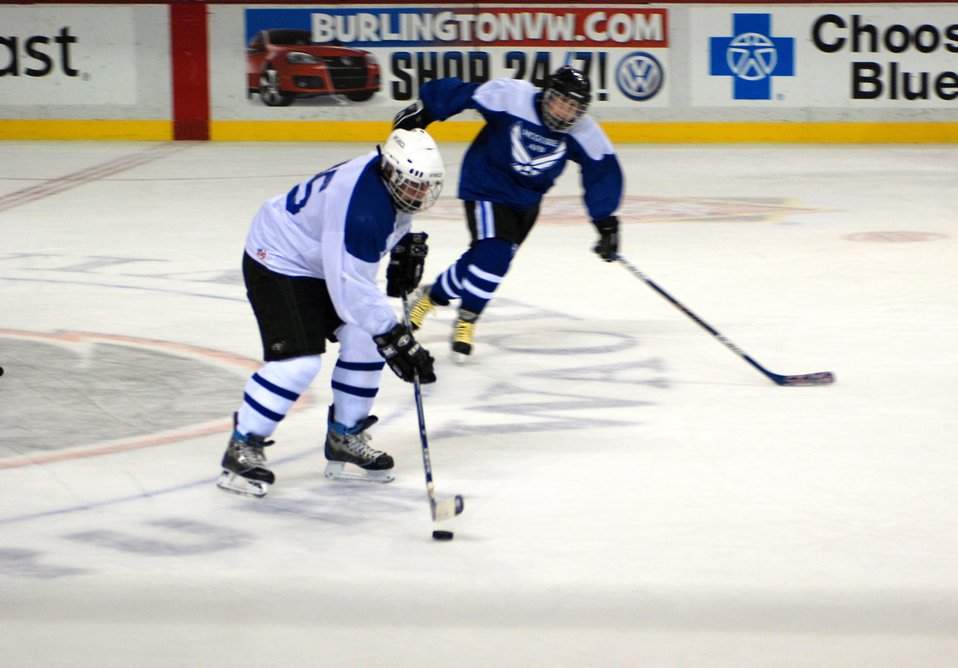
Dover, McGuire raise money for CFC in hockey game

Ray Holland of the Dover Air Force Base, Del., team (left) drives the puck past a McGuire AFB, N.J., player during the all-star charity hockey challenge Jan. 13 in Philadelphia. The game ended with a Dover AFB victory, 9-4 as the teams raised $1,500 for the Combined Federal Campaign in the hockey match.